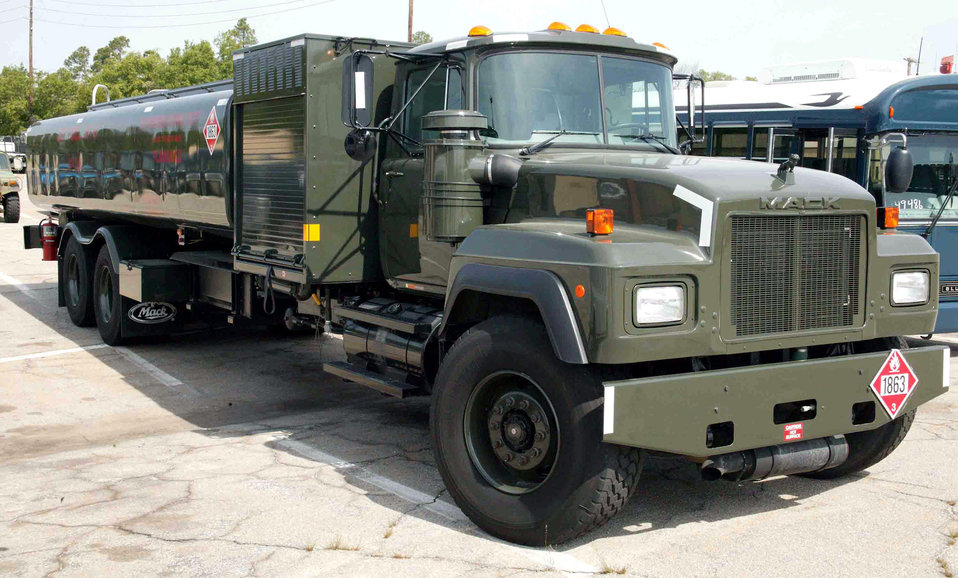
Shaw to begin one-year hybrid refueler test

A 72,000-pound, environmentally-friendly hybrid refueling truck, the only one of its kind in the Air Force, is undergoing a one-year test at Shaw Air Force Base, S.C. It will be tested to see how much money it saves on fuel, maintenance and other cost measurements.